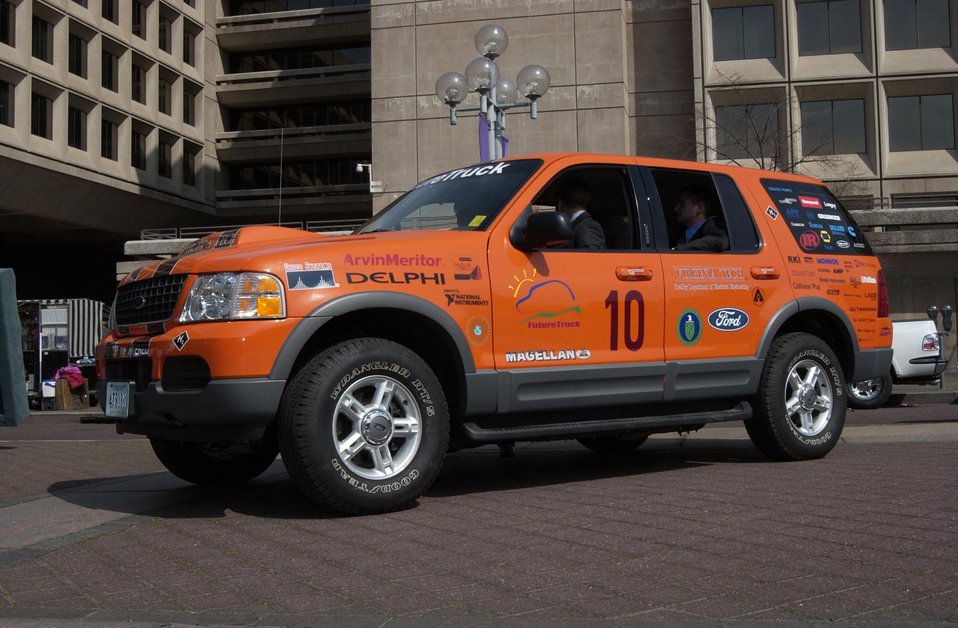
THE VIRGINIA TECH UNIVERSITY RE-ENGINEERED SUV PARTICIPATING IN THE FUTURE TRUCK 2004 EVENT.

ON MARCH 24, 2004, SECRETARY OF ENERGY ABRAHAM AND THE FORD MOTOR COMPANY HOSTED SEVEN STUDENT DESIGNED ENERGY EFFICIENT SPORT UTILITY VEHICLES (SUVS) PARKED OUTSIDE OF DOE HEADQUARTERS IN WASHINGTON, DC. THE STUDENT TEAMS, PART OF THE FUTURE TRUCK 2004 ENGINEERING COMPETITION, RE-ENGINEERED FORD EXPLORERS TO ACHIEVE LOWER-EMISSIONS AND AT LEAST 25% HIGHER FUEL ECONOMY, WITHOUT SACRIFICING PERFORMANCE, UTILITY AND SAFETY. THE UNIVERSITIES THAT PARTICIPATED WERE OHIO STATE, PENN STATE, MARYLAND, TENNESSEE, WISCONSIN-MADISON, VIRGINIA TECH AND WEST VIRGINIA.